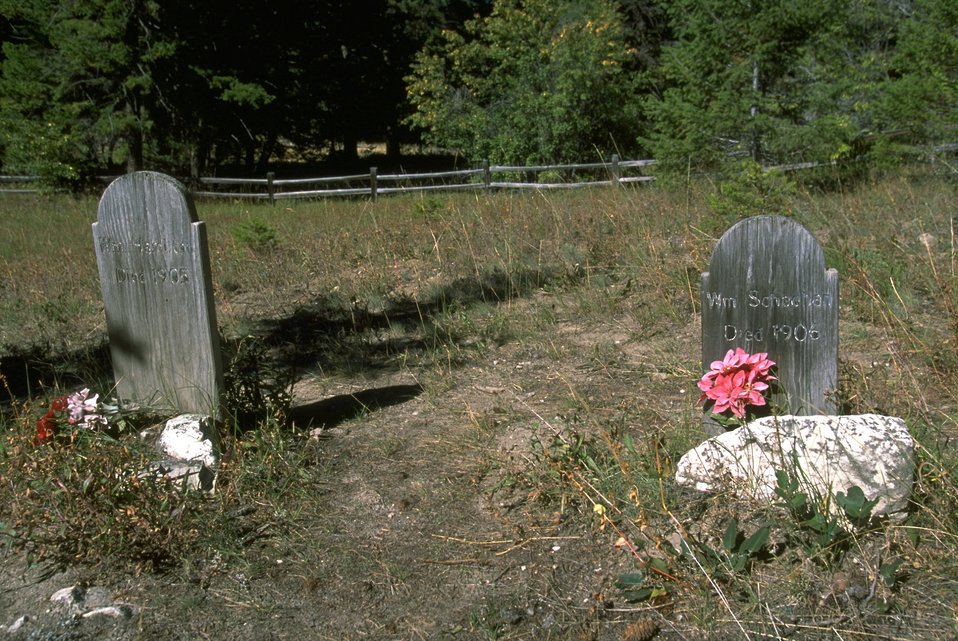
Grave markers at Sand Park cemetery along Garnet Back Country Byway